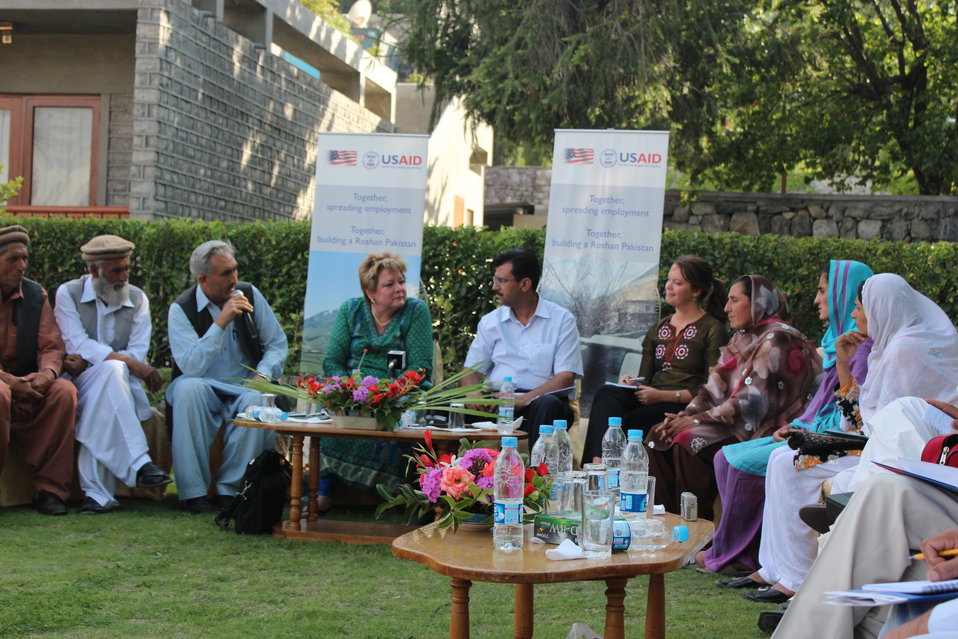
USAID Deputy Country Director Karen Freeman met with 6-8 beneficiaries from Gupis Rural Support Program

On Sunday, USAID Deputy Country Director Karen Freeman met with 6-8 beneficiaries from Gupis Rural Support Program to learn about their project funded by a USAID grant. The meeting took place at Serena Hotel in Gilgit.